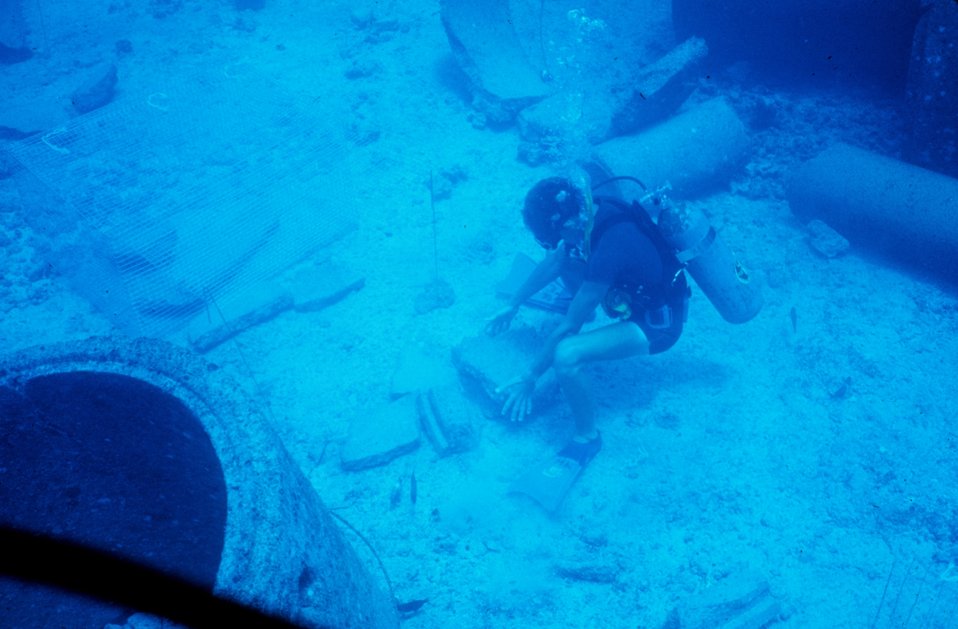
Moving pipe pieces into exclusion cages for grazing study.